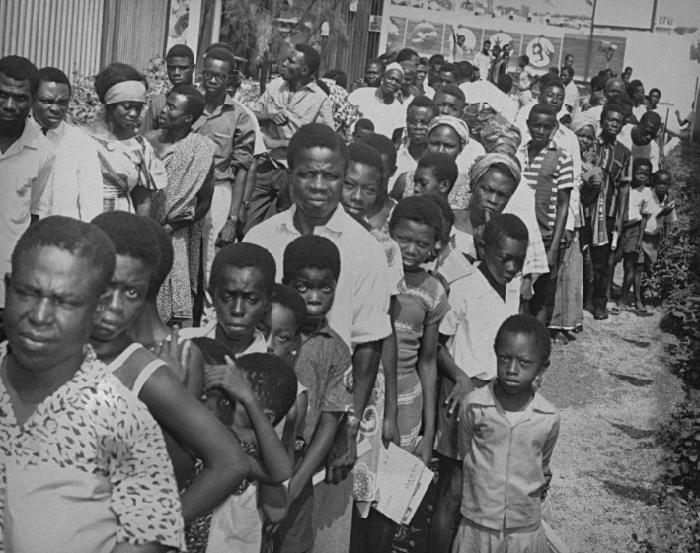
These people were in line to have their children vaccinated for smallpox and measles while at the 1967 Ghana Trade Fair.